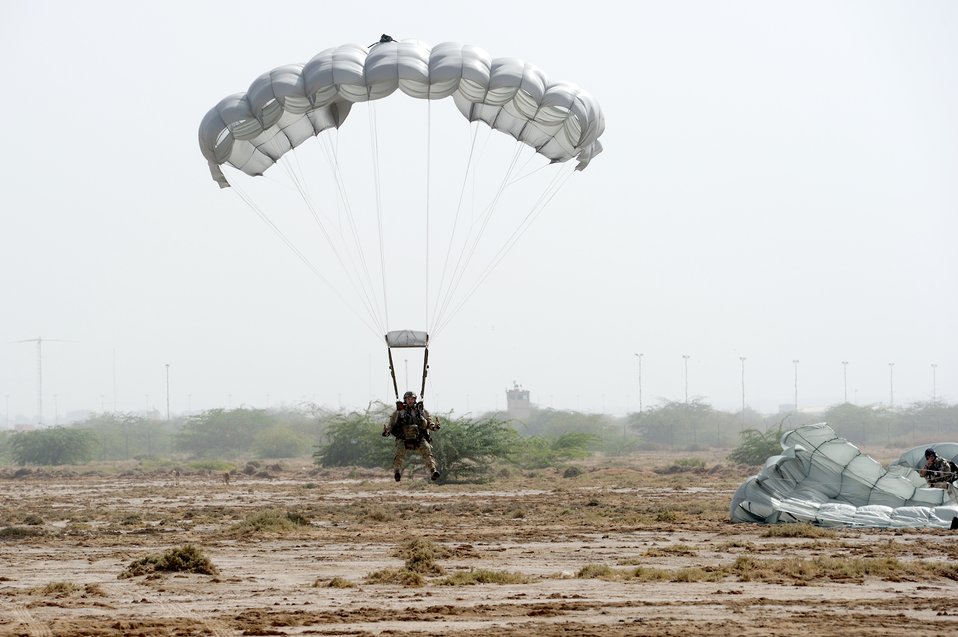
Airmen participate in African rescue exercise

Air Force pararescuemen drop into the zone during a combat search and rescue extraction exercise at an